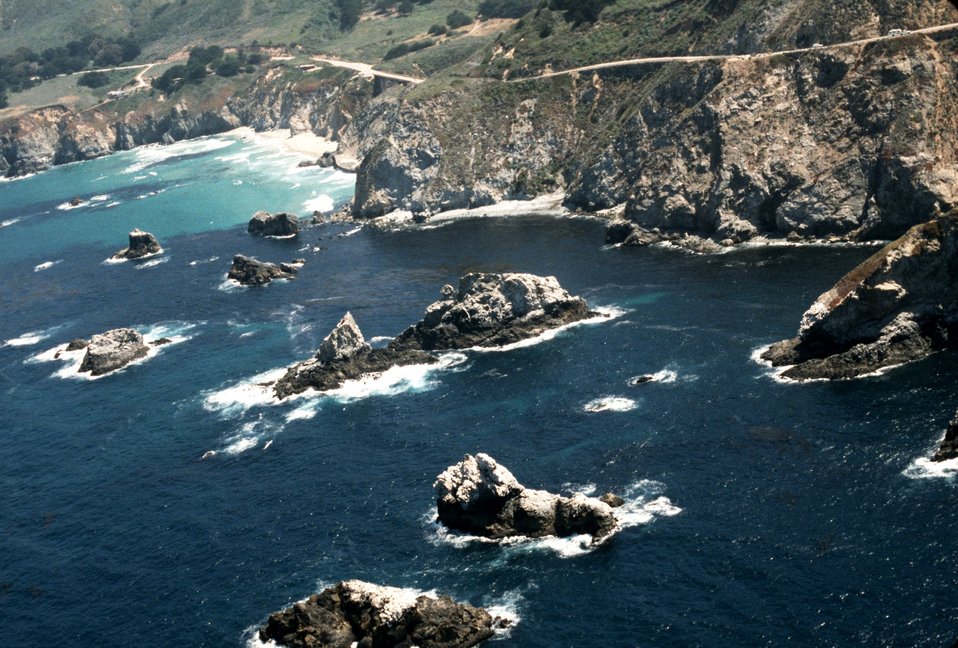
Castle Rocks